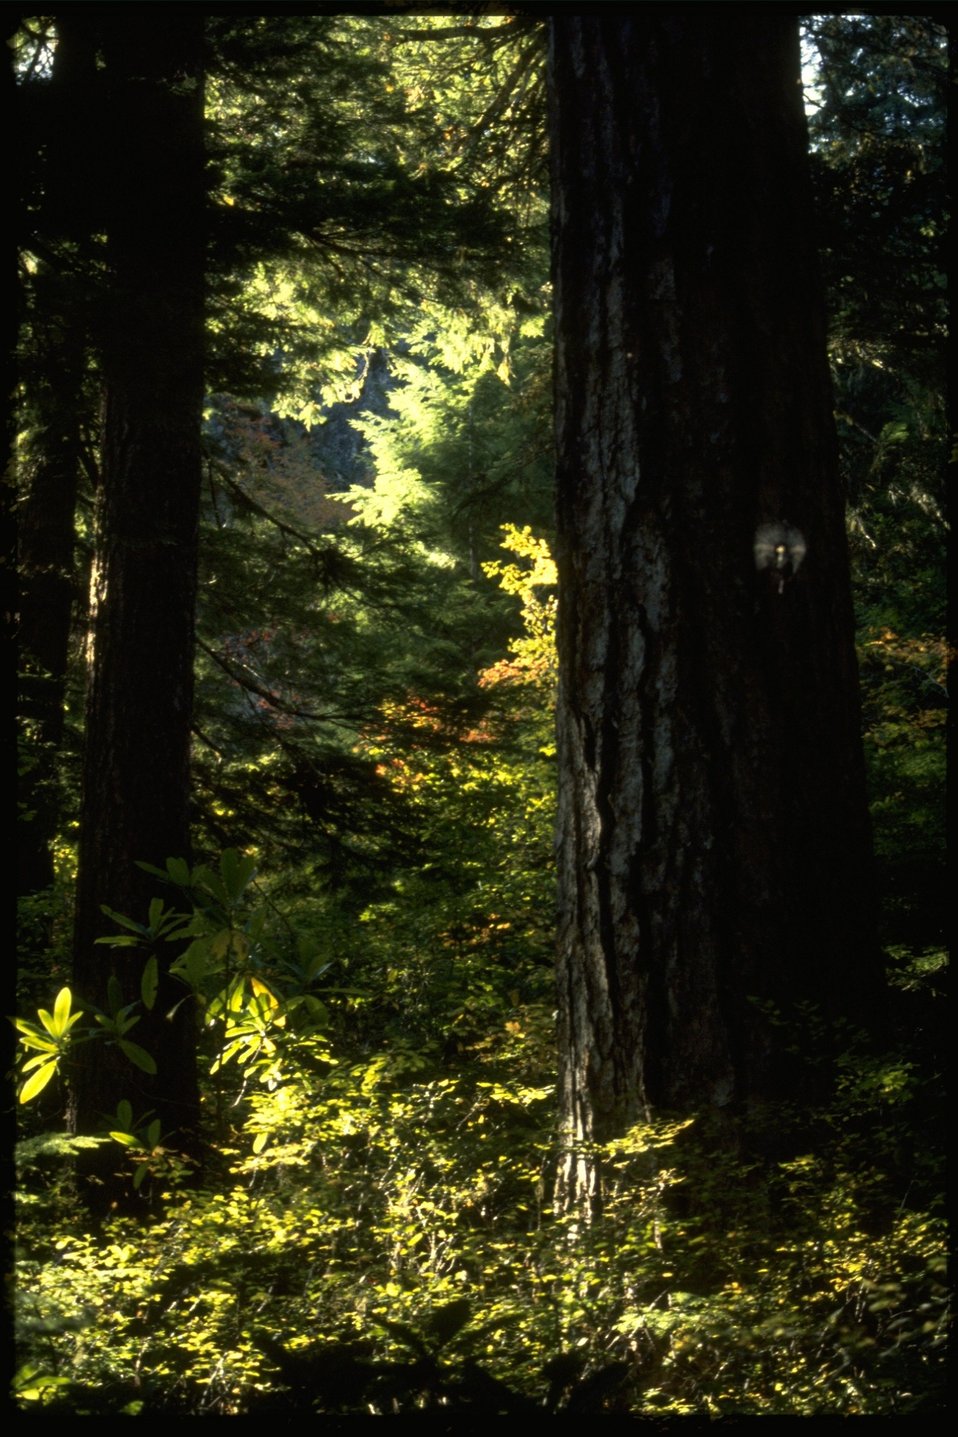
Crabtree Research Natural Area.